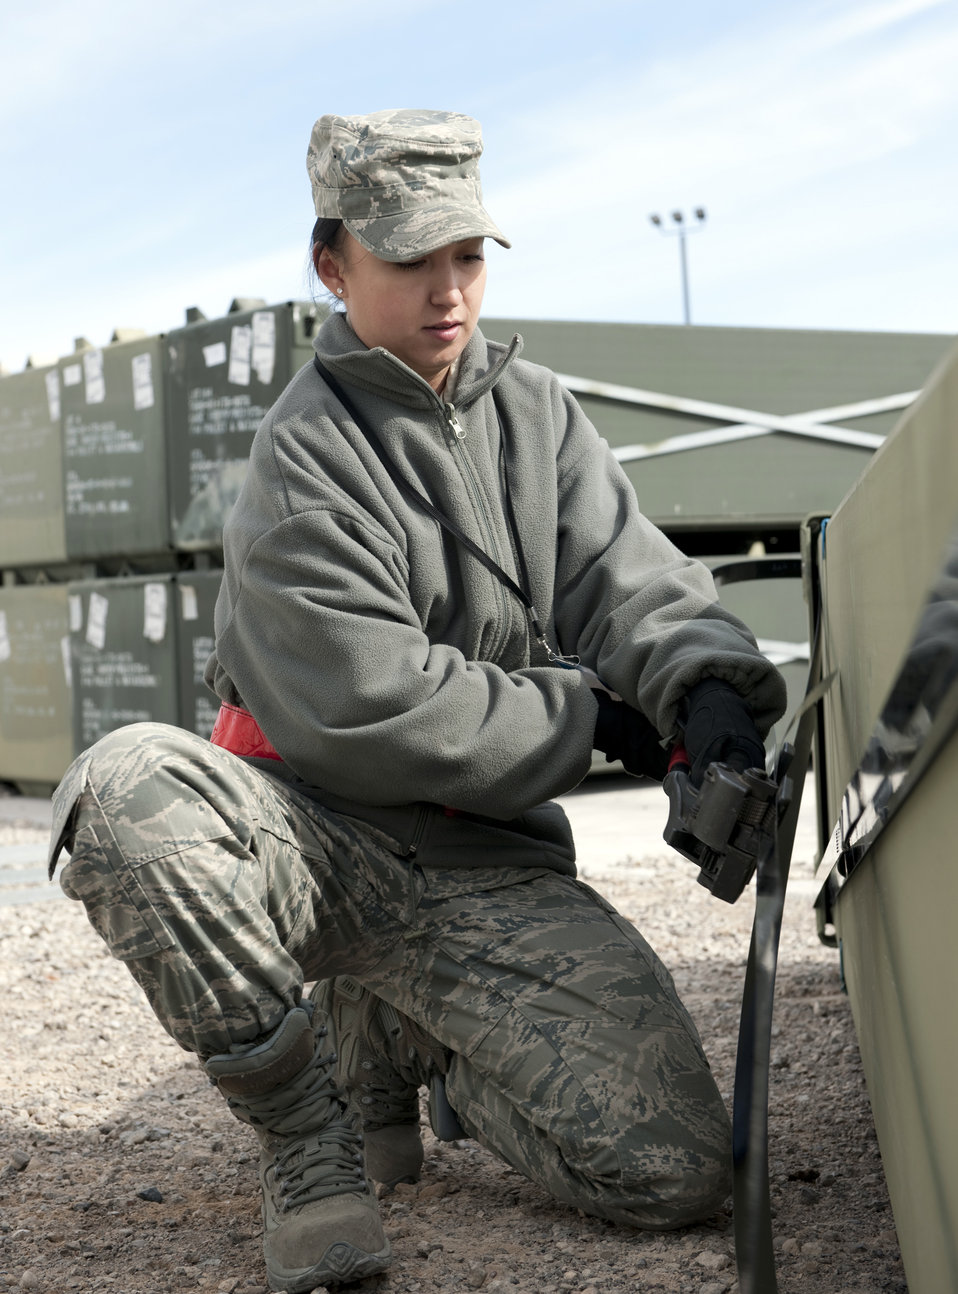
Airmen prepare BEAR base for troops in Afghanistan

Airman 1st Class Olga Apairna installs steal straps on a container of AM-2 matting prior to its shipment to Afghanistan Feb. 24, 2010, at Holloman Air Force Base, N.M. Airman Apairna is assigned to the 49th Materiel Maintenance Support Squadron. The 49th MMSS is deploying 480,000 square feet of the matting that will be assembled to create airstrips supporting joint and coalition forces throughout Afghanistan.